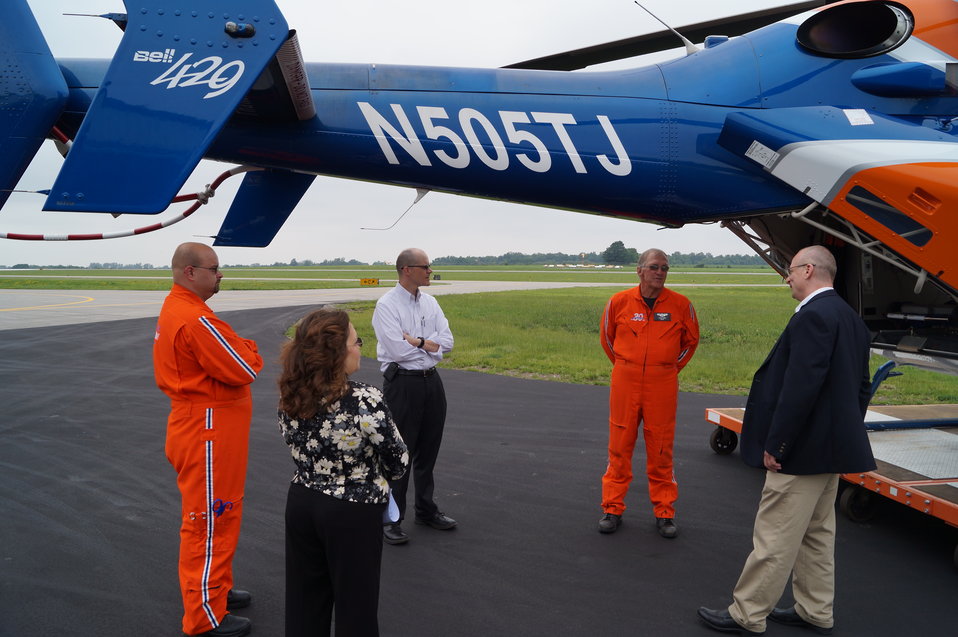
U.S. Department of Agriculture (USDA) Rural Development (RD) Acting Deputy Under Secretary Doug O’Brien (center, white shirt), N.Y. State Director Stanley Lee Telega (right) and USDA Area Specialist Dawn Kauras visit the new state-of-the-art Mercy Flight Helicopter. Mercy Flight offers emergency services to rural residents throughout Western New York. USDA provided funding support.